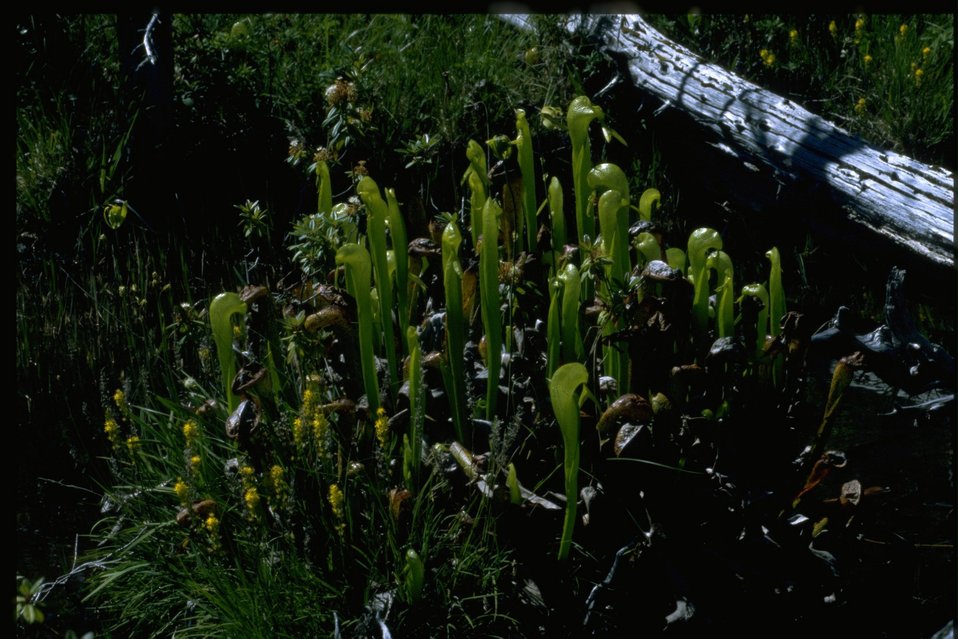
Medium shot of Cobra Lily, Darlingtonia californica.